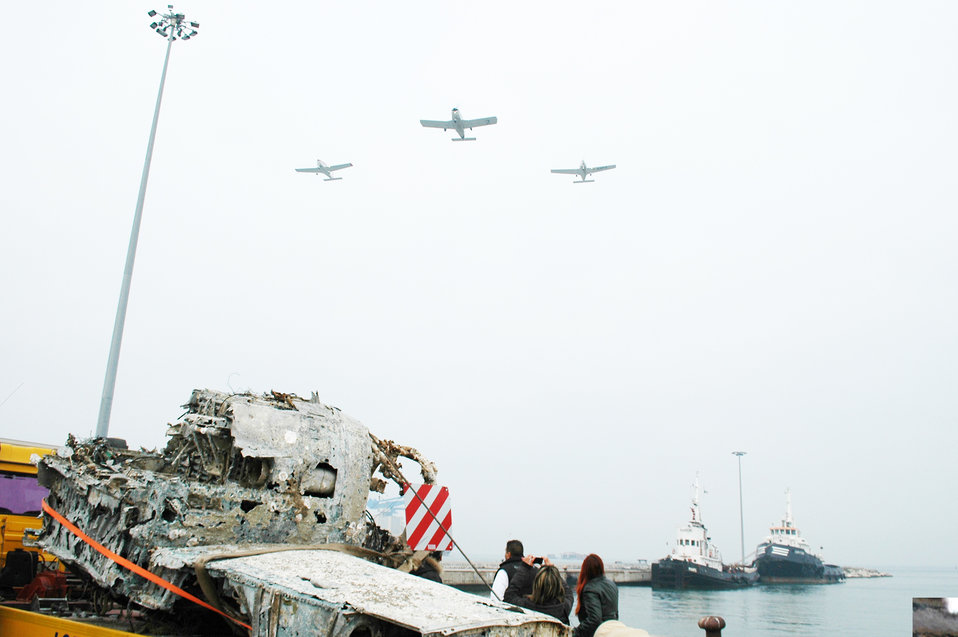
Italian fishermen net historic 'Jug' at sea

An Italian fisherman and his family look on as an Italian aero club performs a ceremonial fly-over during a ceremony Nov. 14, 2009, in Chioggia, Italy. The ceremony honored the unknown pilot and other pilots past and present, and transferred the wreckage believed to be that of a P-47 Thunderbolt recovered from the bottom of the Adriatic Sea May 12, 2009, to an Italian aero club who will begin a restoration project expected to take two years.